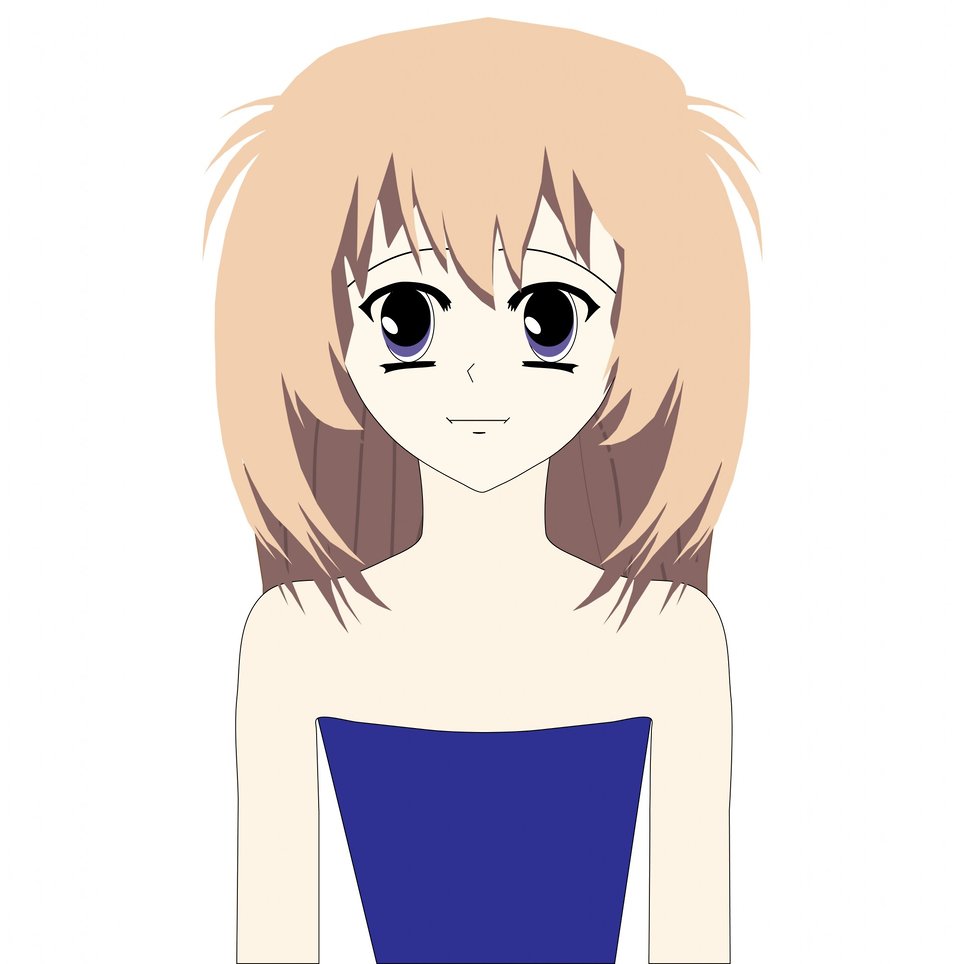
Teenage girl anime character

Teenager girl character anime style art on white background.